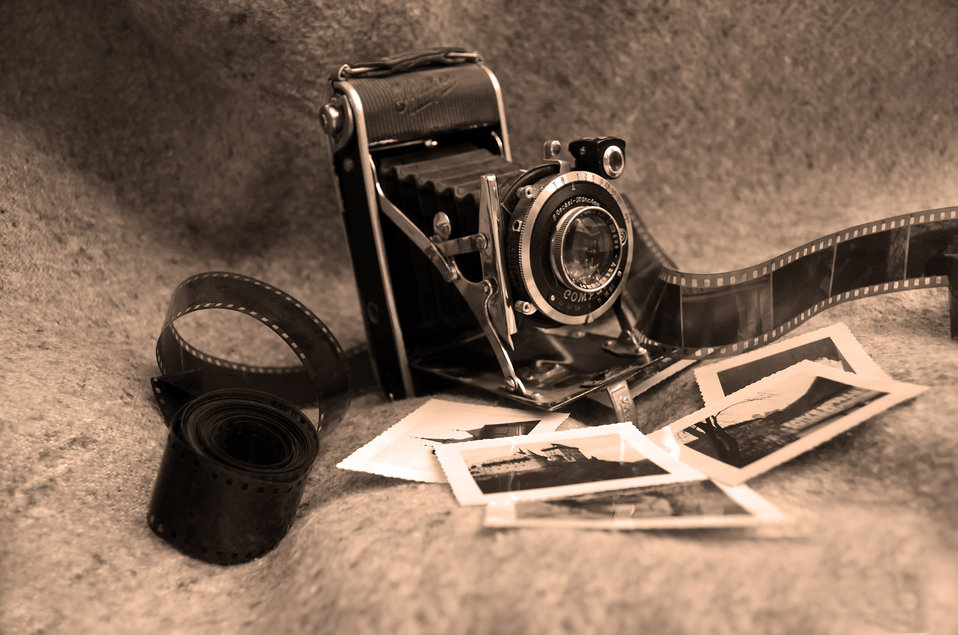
Old camera - wallpaper.